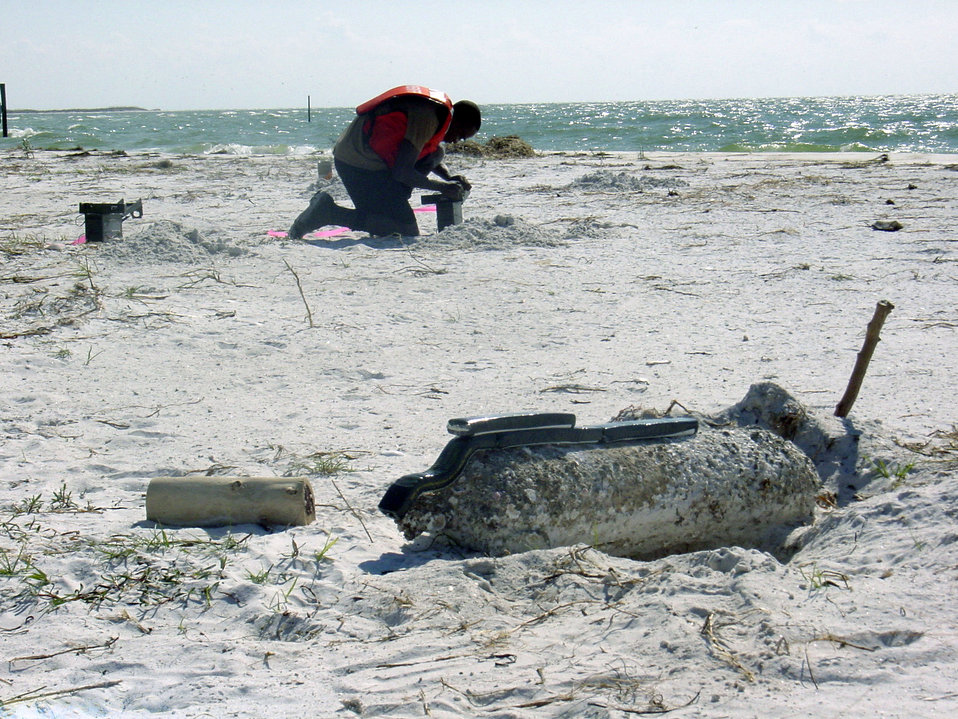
Airmen explode bomb found on Florida beach

PASSAGE KEY ISLAND, Fla. -- Airman 1st Class Ed Howell prepares explosive charges Oct. 13 to destroy a World War II-era M46 photoflash bomb found here. He is assigned to the explosive ordnance disposal team at nearby MacDill Air Force Base.